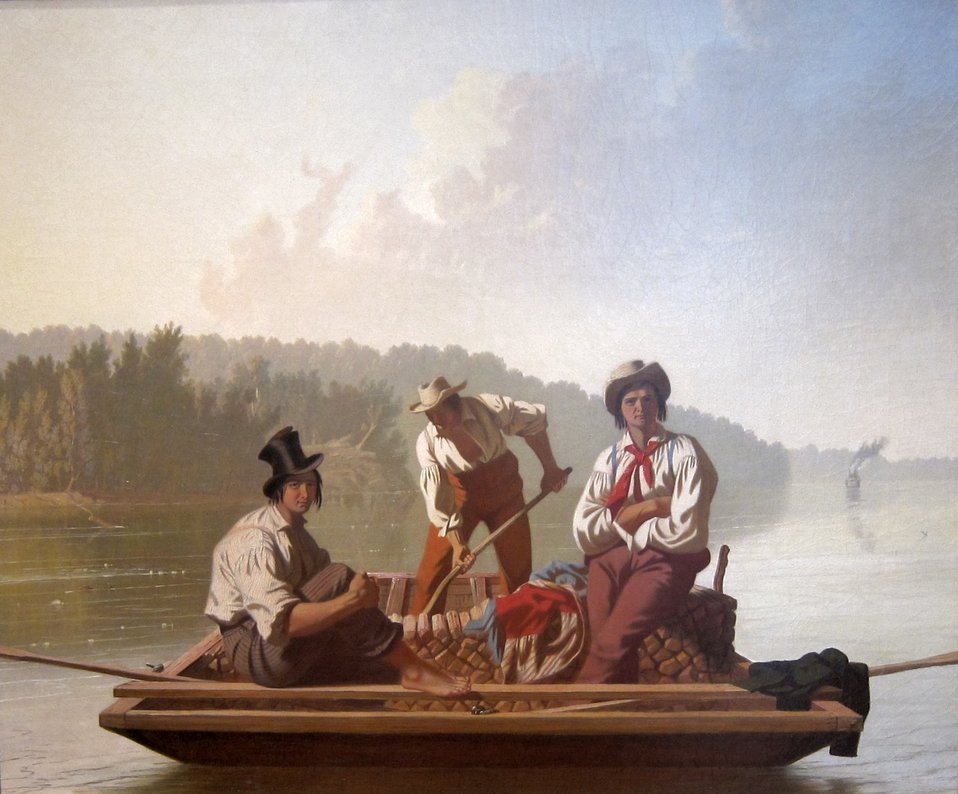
'Boatmen on the Missouri' by George Caleb Bingham, De Young Museum